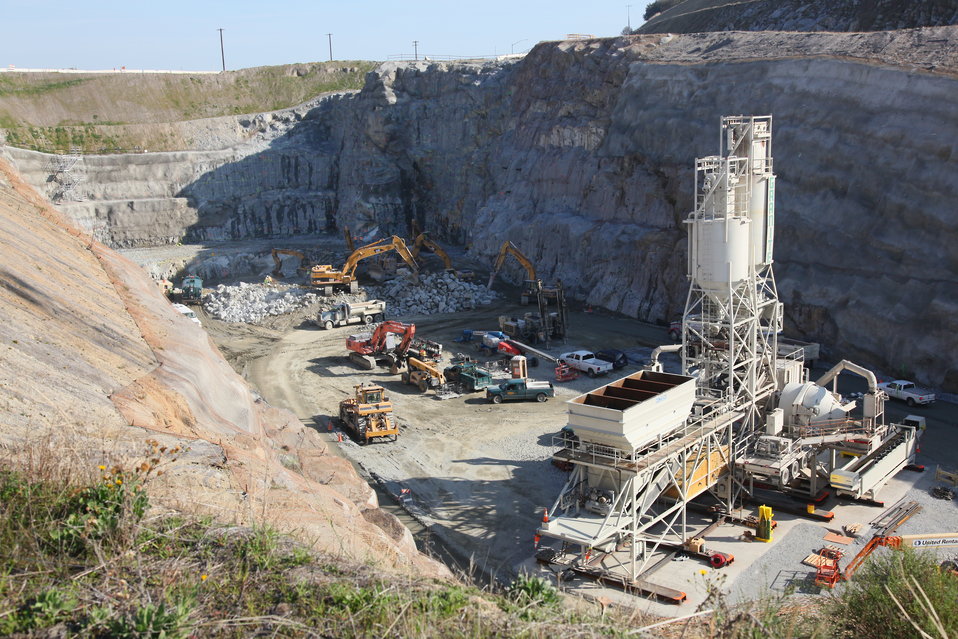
Batch plant at the Folsom auxiliary spillway

Work continues on installing concrete mixing equipment for the new Folsom Dam auxiliary spillway in Folsom, Calif., Feb. 17, 2012. Concrete paving of the spillway chute is scheduled to begin in May. The spillway will allow Folsom Dam to release water sooner and more safely. The project is part of the Folsom Dam Joint Federal Project, a joint effort of the U.S. Army Corps of Engineers Sacramento District, the U.S. Bureau of Reclamation, the Central Valley Flood Protection Board and the Sacramento Area Flood Control Agency to improve the safety of the dam and reduce flood risk for the greater Sacramento area.